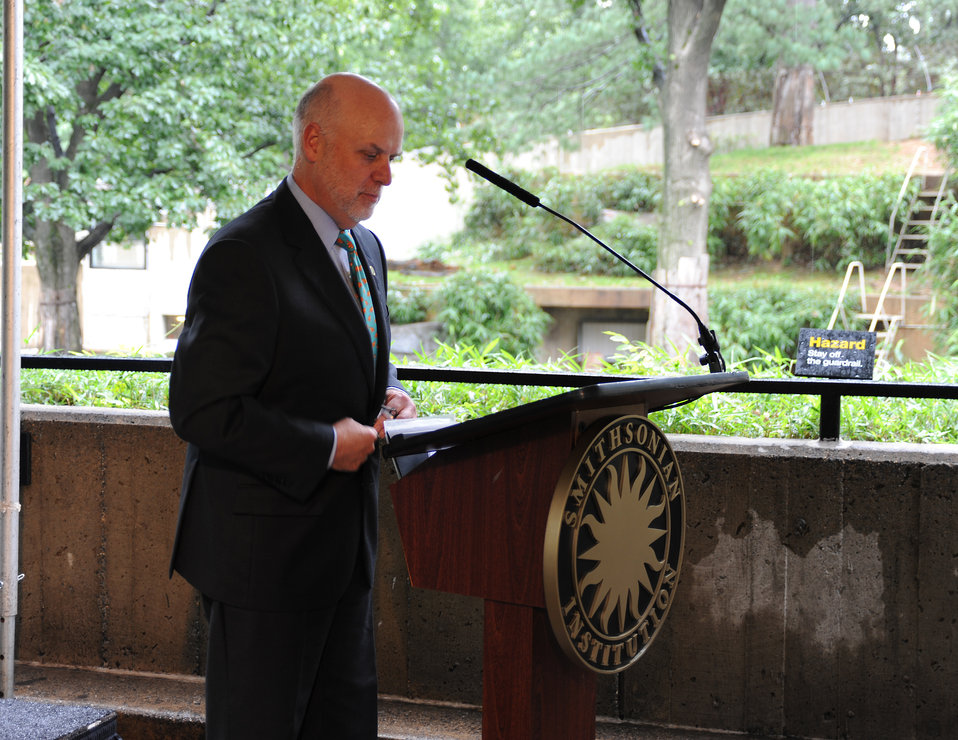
Save Vanishing Species Stamp First Day of Issue